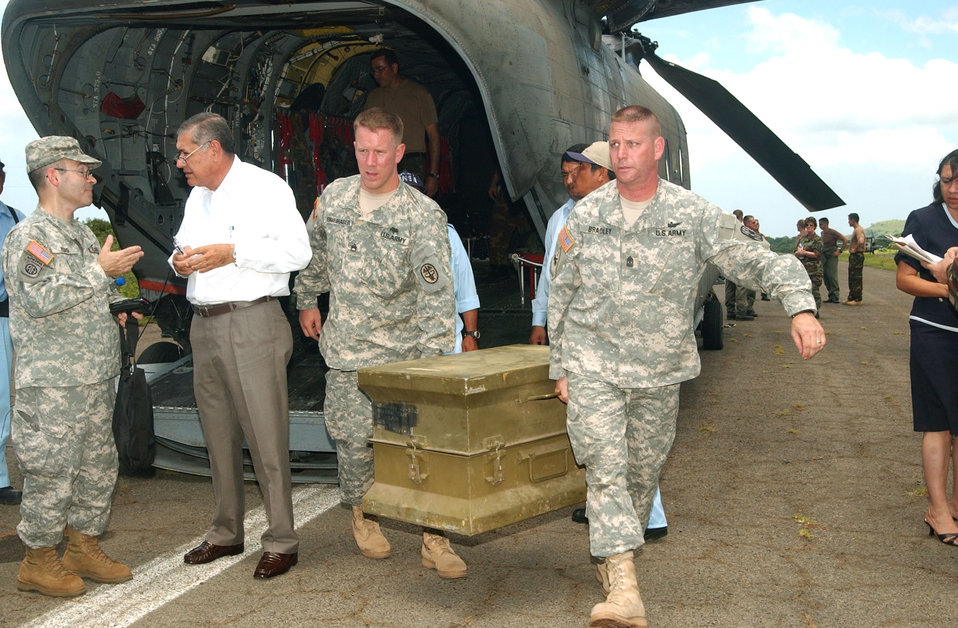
U.S. military gives medical equipment to Nicaragua

Army Staff Sgt. William Grieshaber and Army Master Sgt. John Bradley remove a trunk with medical equipment from a Chinook helicopter in Leon, Nicragua, Sept. 13 while Army Lt. Col. Robert Pero talks with Israel Konturosky, the sub minister of health to Nicaragua. Members from Joint Task Force-Bravo at Soto Cano Air Base, Honduras, responded to a request for help from the U.S. Embassy in Nicaragua when a hospital became overwhelmed with people who had been poisoned by a toxic batch of moonshine.